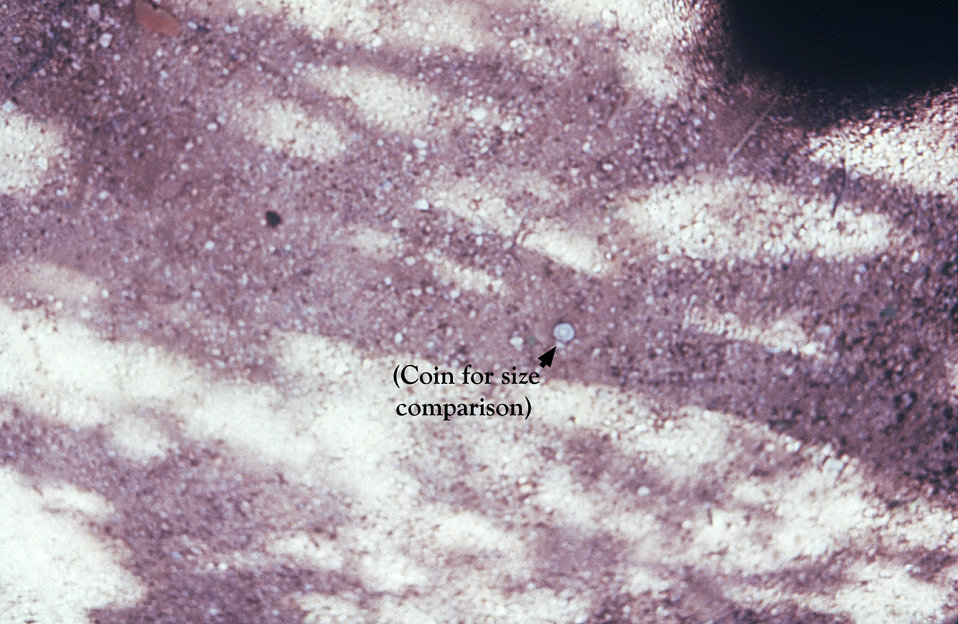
Found under Mopani trees in a Beitbridge, Zimbabwean campground, were these Mopani worm casings and their excreta.